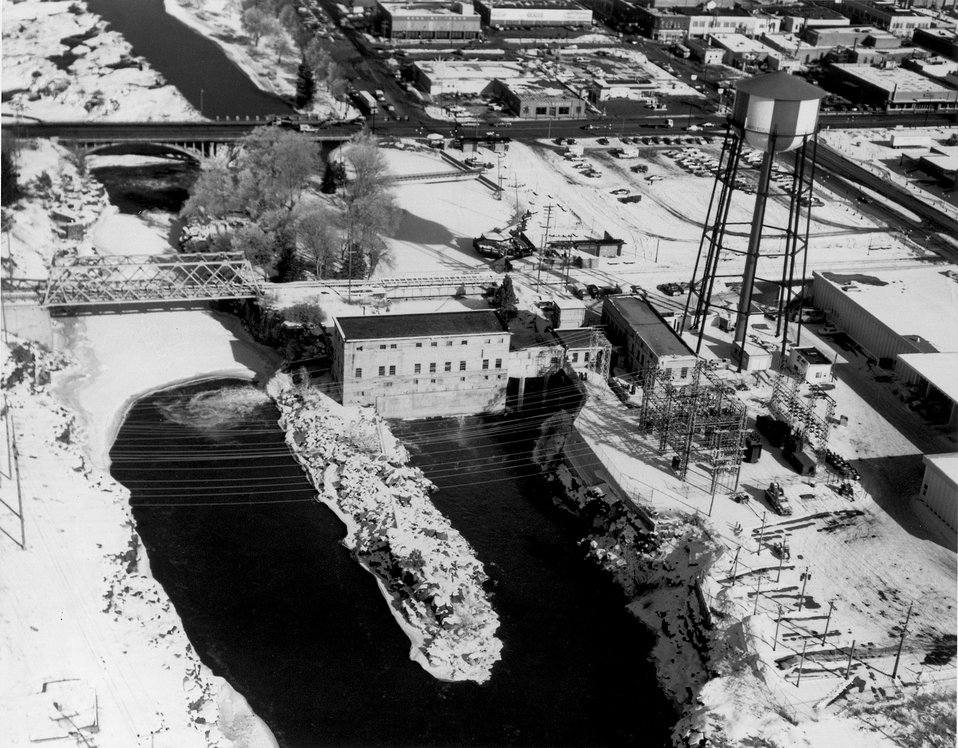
An aerial photograph of the existing power plant at the 'city' site. c. 1978